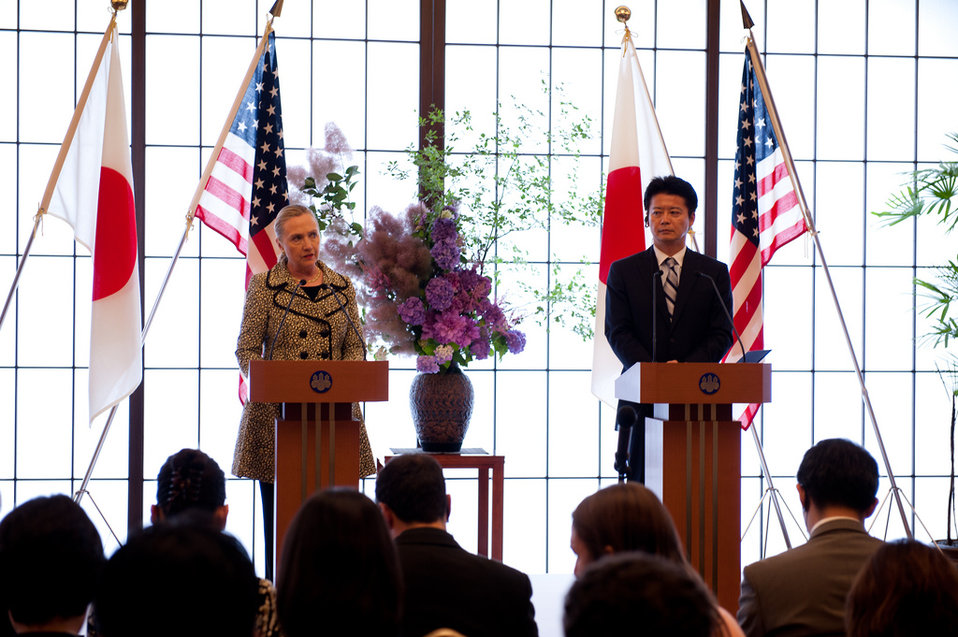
Secretary Clinton and Japanese Foreign Minister Gemba Address Reporters

U.S. Secretary of State Hillary Rodham Clinton and Japanese Foreign Minister Koichiro Gemba hold a joint press conference after the Tokyo Conference on Afghanistan in Tokyo, Japan, on July 8, 2012.